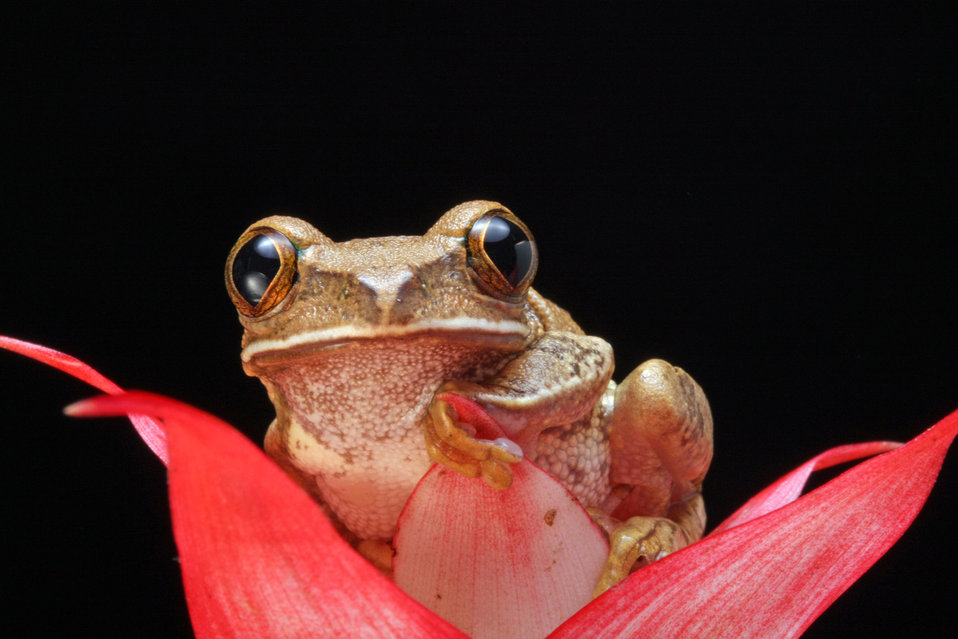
Frog macro portrait

Close-up macro frog portrait of a painted reed frog or marbled reed frog.